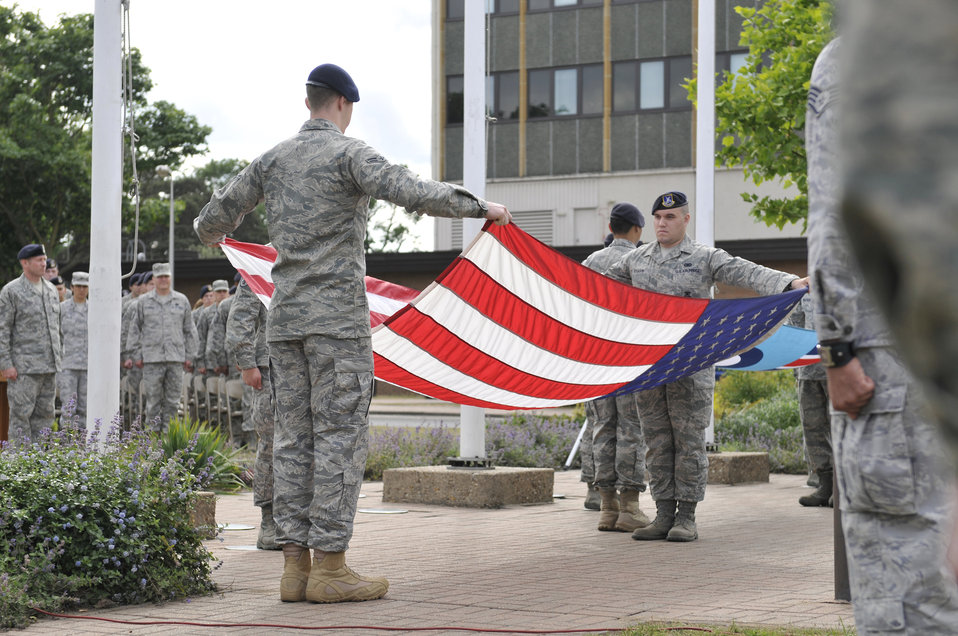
Respect and admiration

Airmen assigned to the 48th Security Forces Squadron fold the American and British flags May 20, 2011, at Royal Air Force Lakenheath, England, during a ceremony marking the end of National Police Week. National Police Week honors law enforcement officers for their dedication, sacrifice and service.